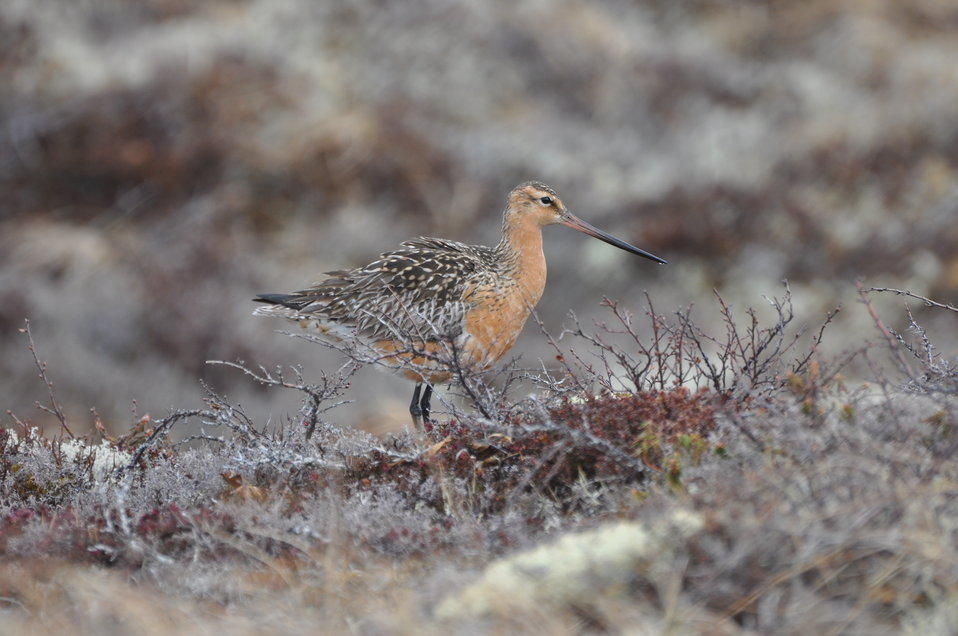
Bar-tailed Godwit

Andreafsky wilderness, Yukon Delta National Wildlife Refuge